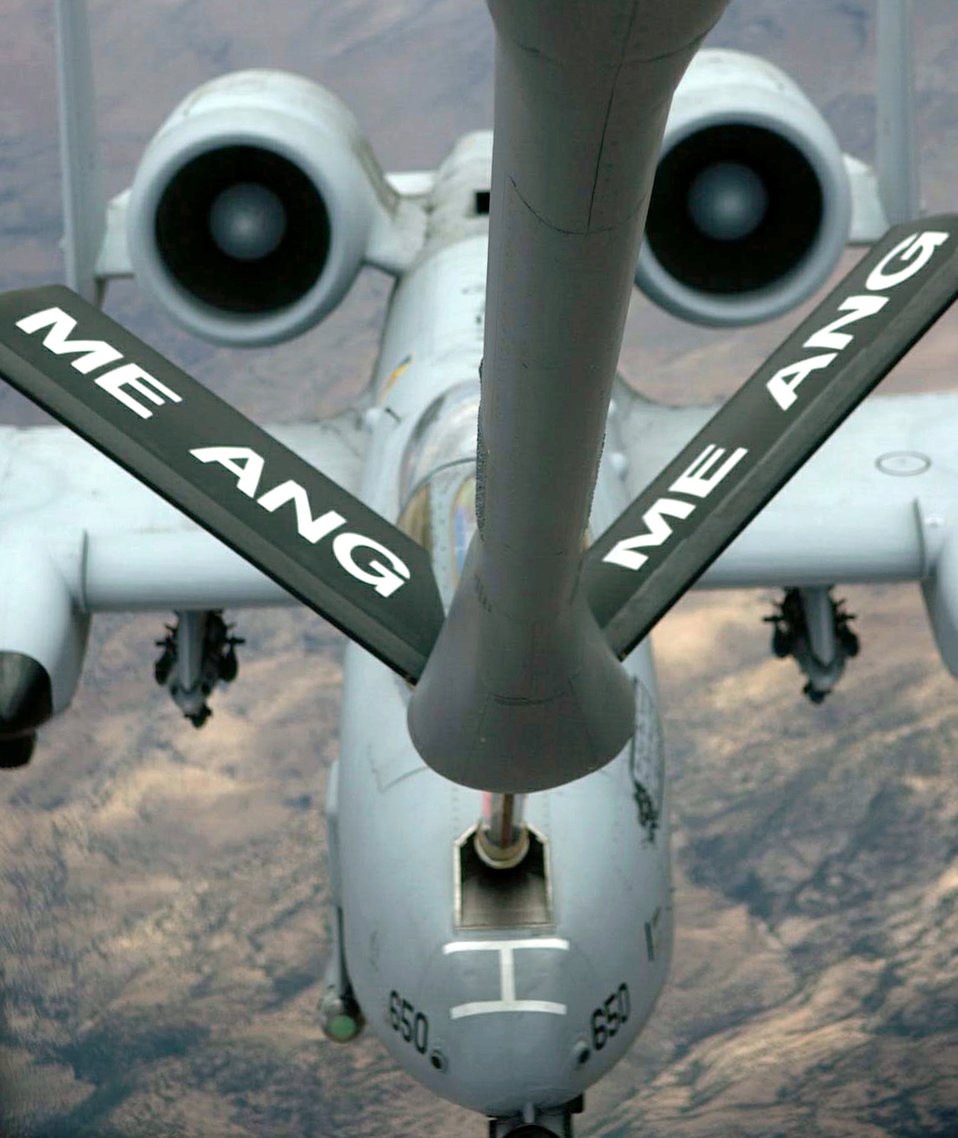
Fueled and ready

An A-10 Thunderbolt II receives fuel from a KC-135E Stratotanker during a training mission Friday, April 14, 2006, over Tucson, Ariz. The A-10 is from the 358th Fighter Squadron at Davis-Monthan Air Force Base, Ariz., and the KC-135E is from the Air National Guard's 101st Air Refueling Wing at Bangor, Maine.